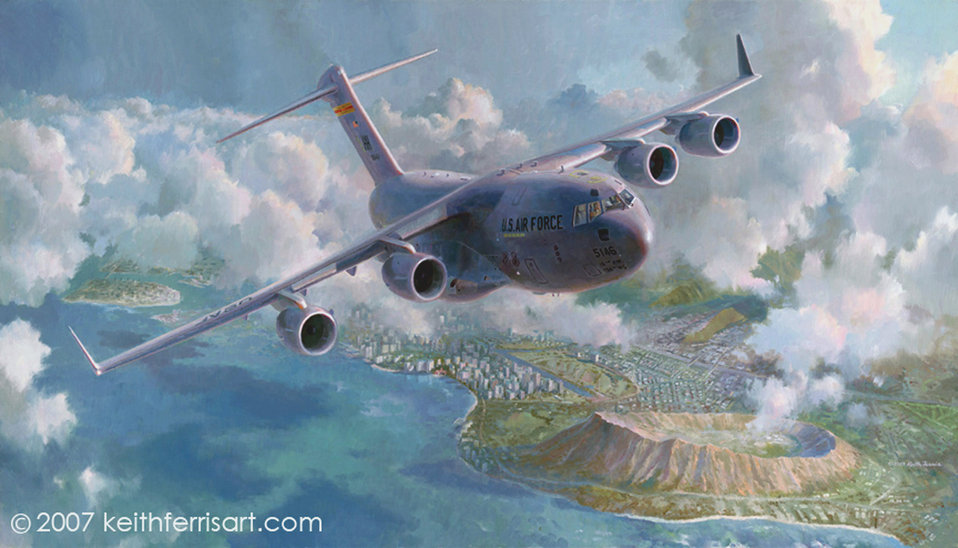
PACAF admires 'Waikiki Sunrise'

Artist Keith Ferris created